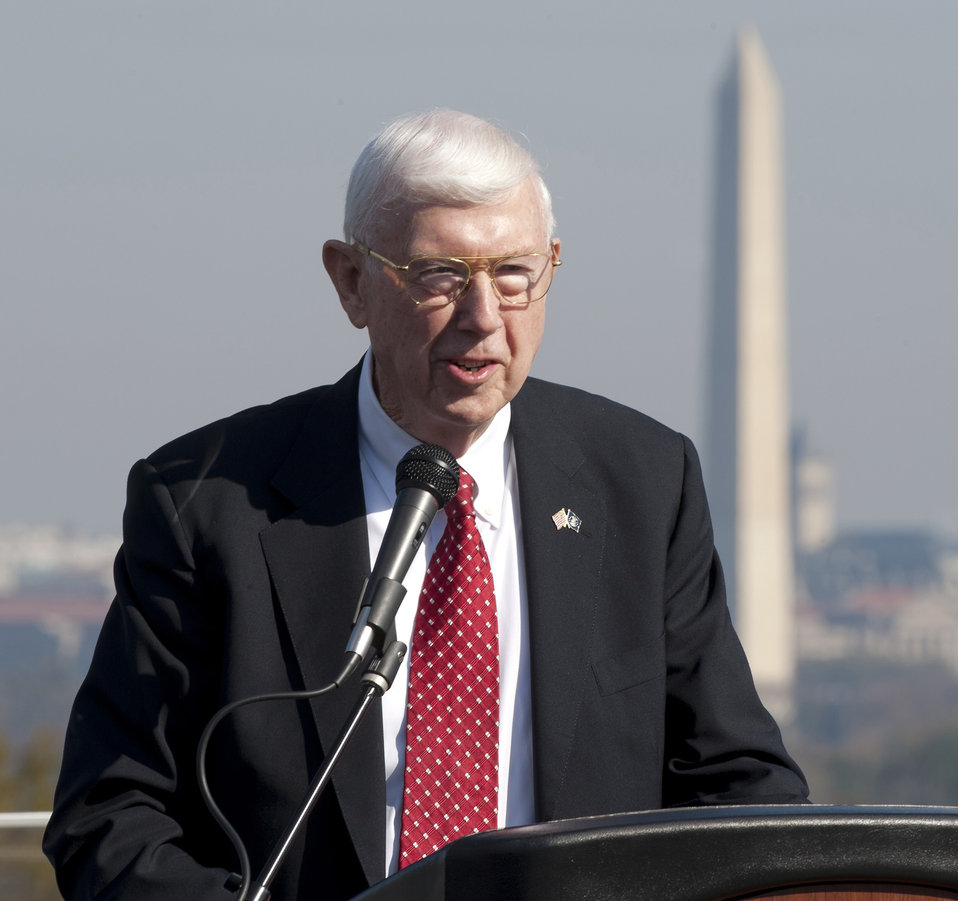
Veterans Day

Retired Gen. Richard Shaud, former executive director for the Air Force Association, addresses the audience who attended a wreath laying ceremony in observance of Veterans Day on Nov. 11, 2012, at the Air Force Memorial in Arlington, Va.